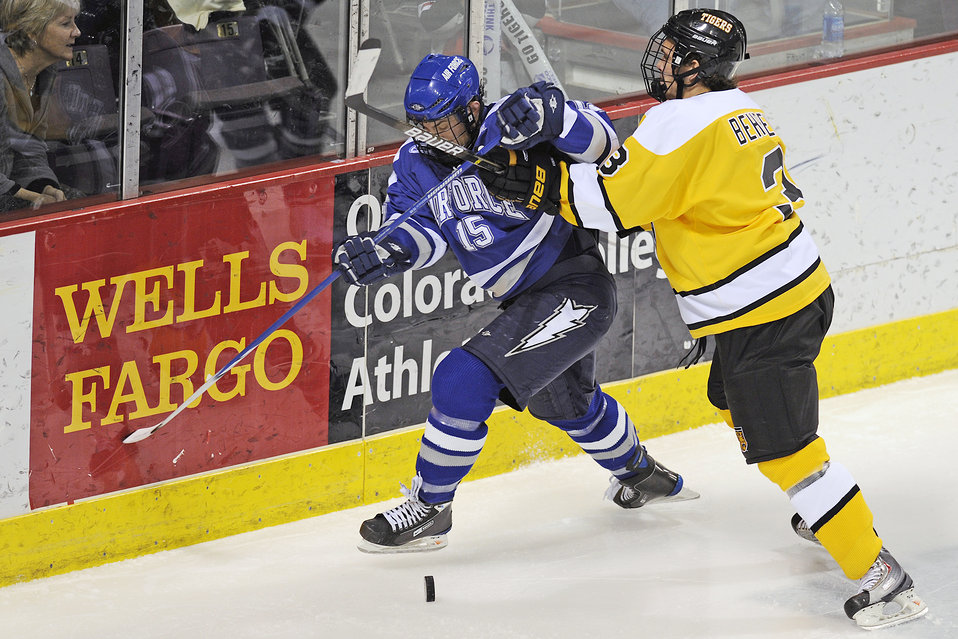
Falcons lose in match with Colorado Tigers

Academy junior forward Sean Bertsch fights for control of the puck with Colorado College's Ted Behrend as the 10th-ranked Tigers beat Air Force 2-0 in a non-conference hockey game Feb. 5, 2010, at the World Arena in Colorado Springs, Colo.